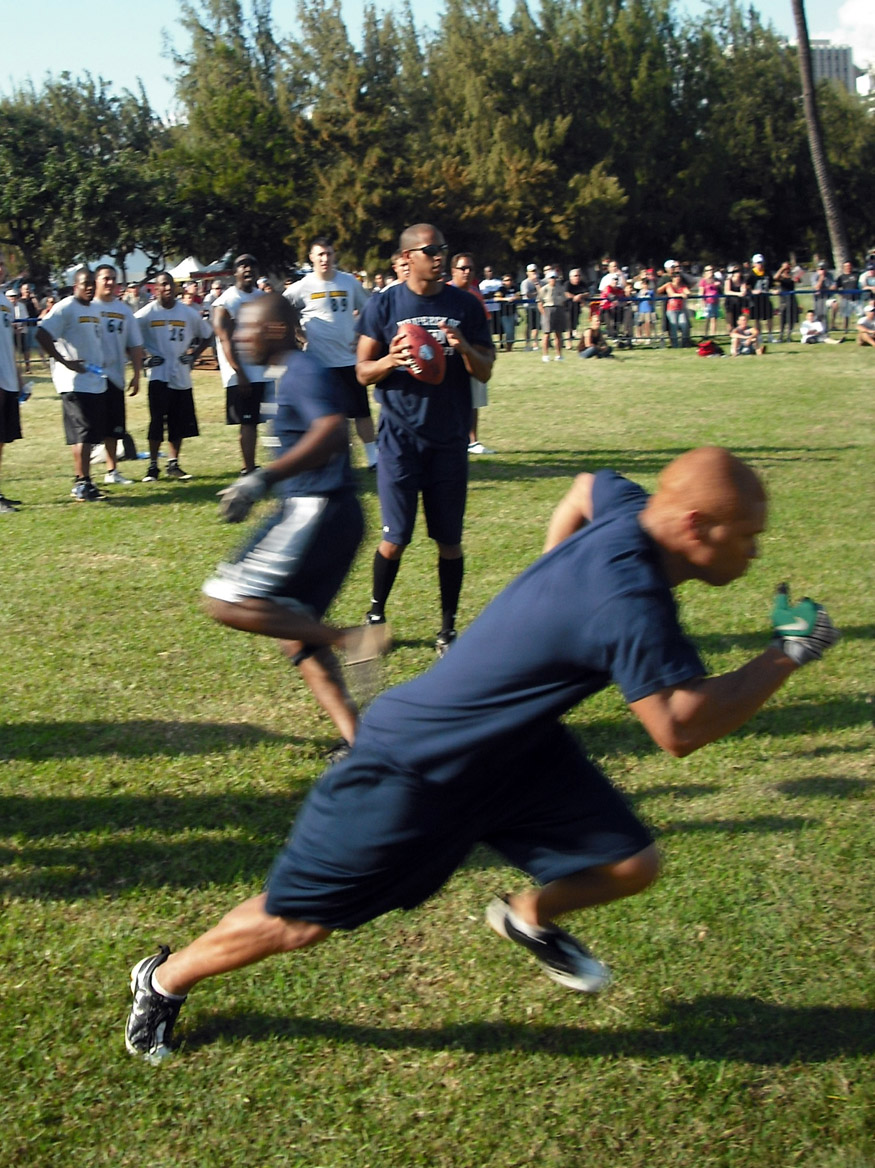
NFL Military Challenge

1st Lt. Nate Allen (front) takes off for the final pass of the quarterback challenge as Capt. Marcus Fox crosses the line Feb. 7 during the NFL Military Challenge in Oahu's Kapiolani Park. Capt. Dwayne Clark completed all eight of his pass attempts, most notably the record-setting 43 yard toss to Lieutenant Allen on the competition's final play.